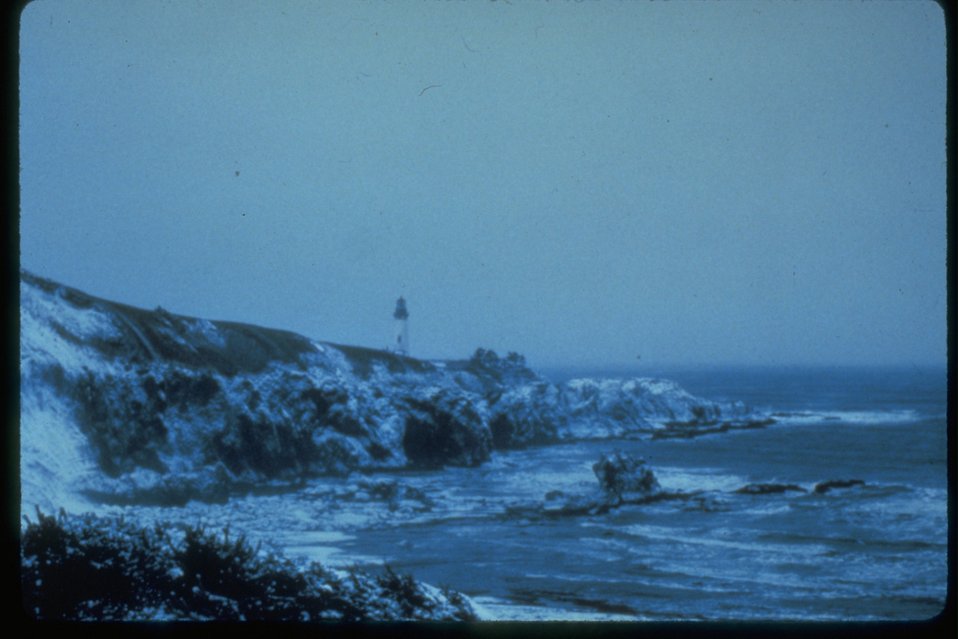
View of Yaquina Headland.